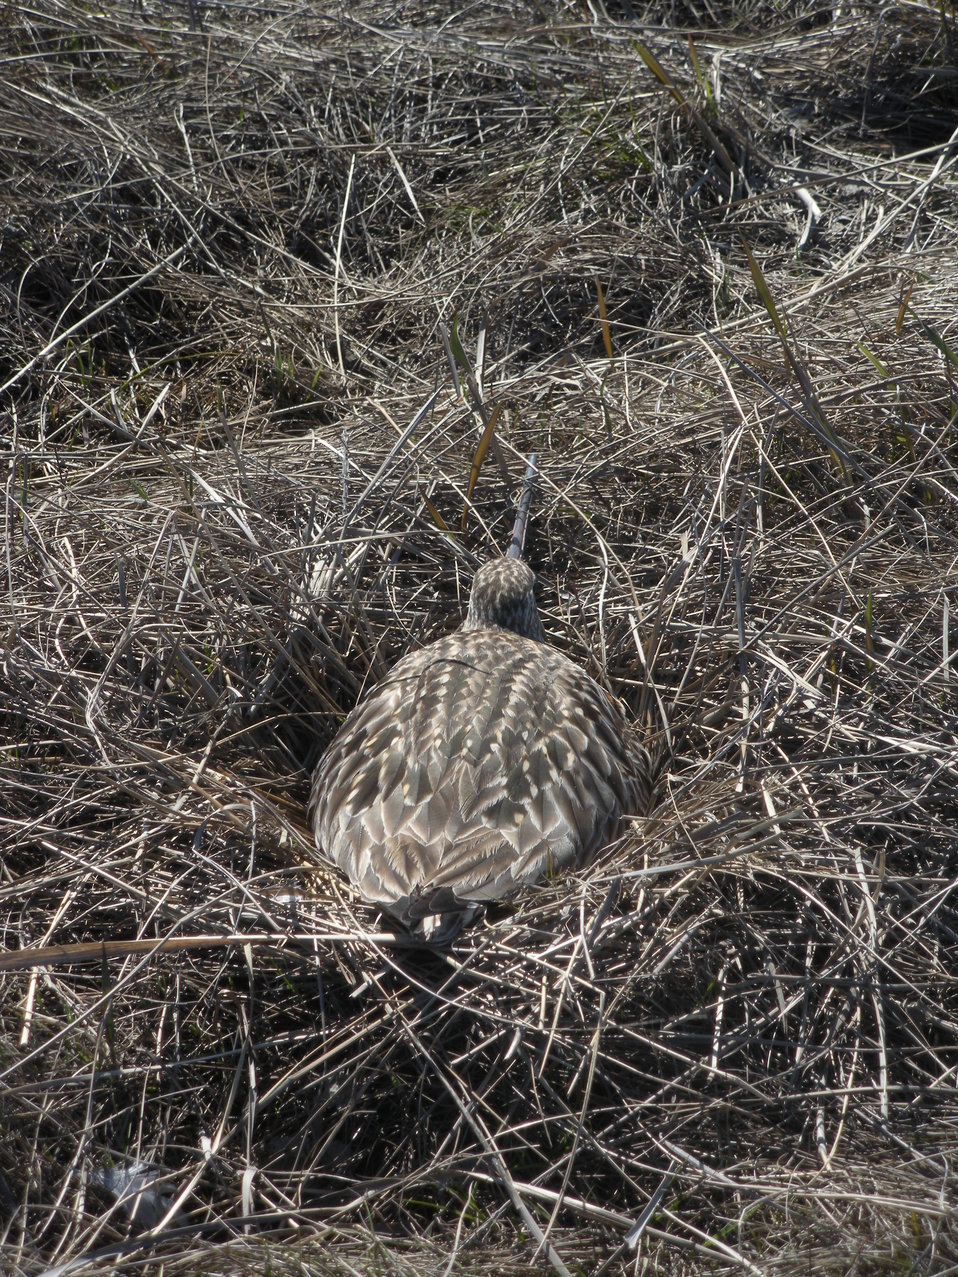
Godwit sitting on nest

Yukon Delta NWR
This female is very cryptic and can be easily overlooked